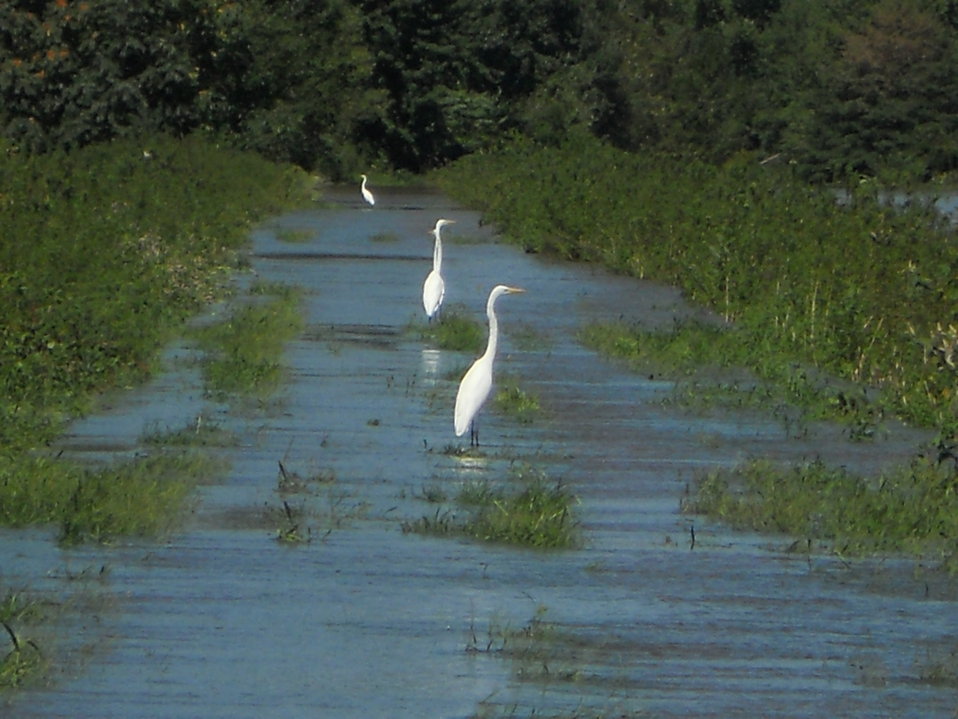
Hurricane Damage at Wallkill River National Wildlife Refuge August 30, 2011

Flooding at Liberty Loop Trail and impoundments, Sussex, NJ.